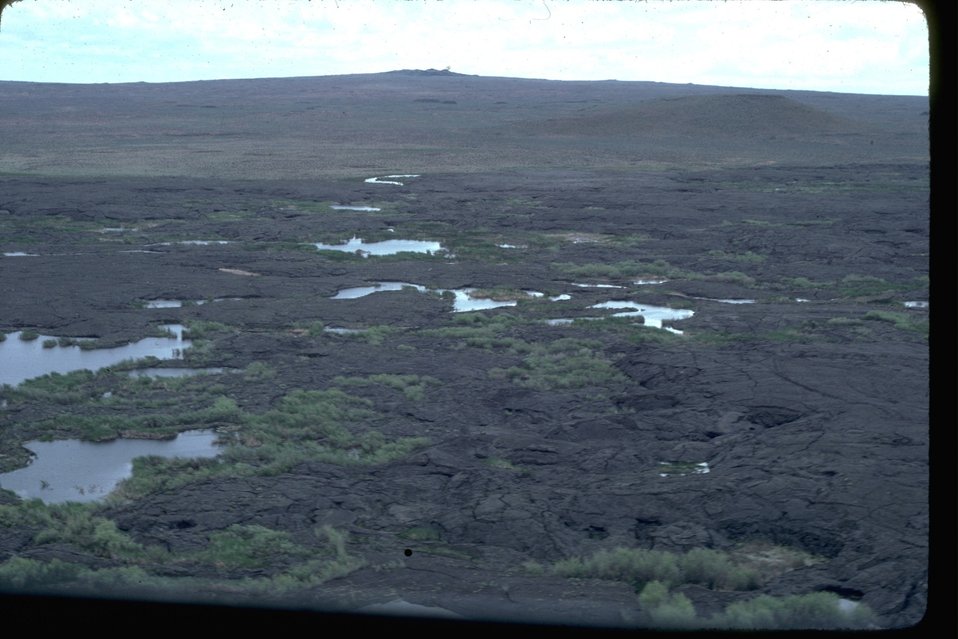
Small ponds in the Jordan Craters Wilderness Study Area. OR 3-128.